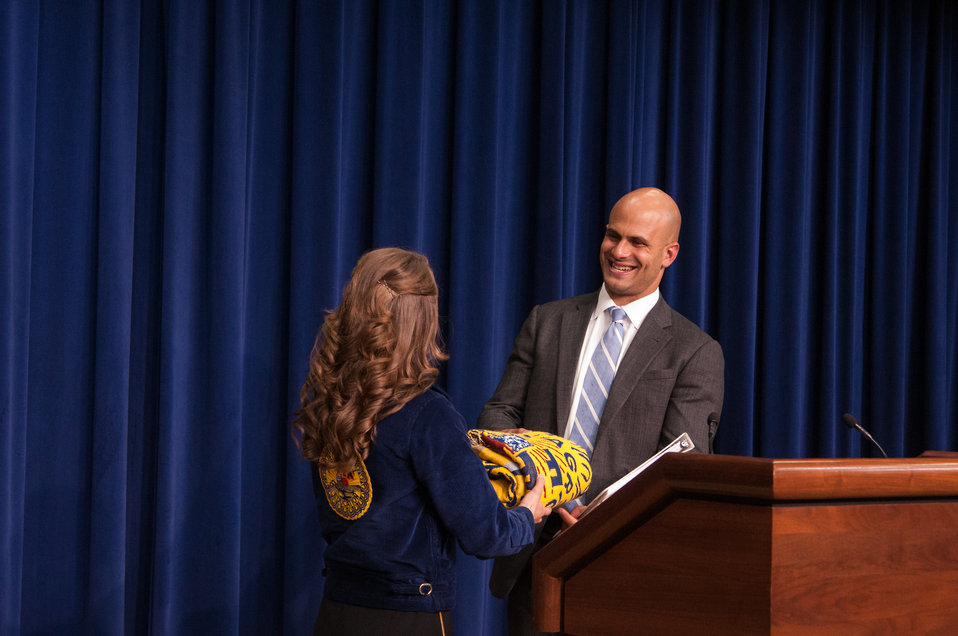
FFA National Secretary Kalie Hall (GA) presents White House Chef Sam Kass a token gift of appreciation at a meeting of the White House Rural Council on Wednesday, Jul. 24, 2013 in Washington, D.C. Chef Kass discussed nutrition and agriculture topics.